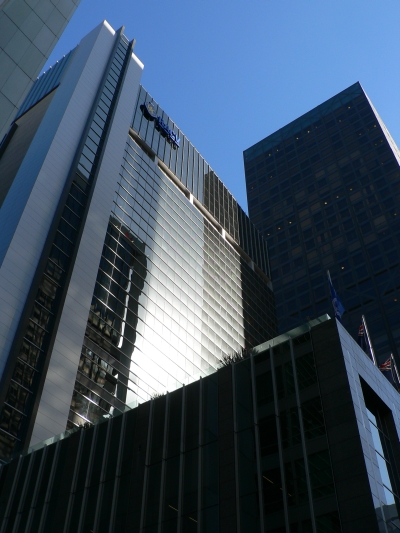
RACV Headquarters. Bourke Street, Melbourne.